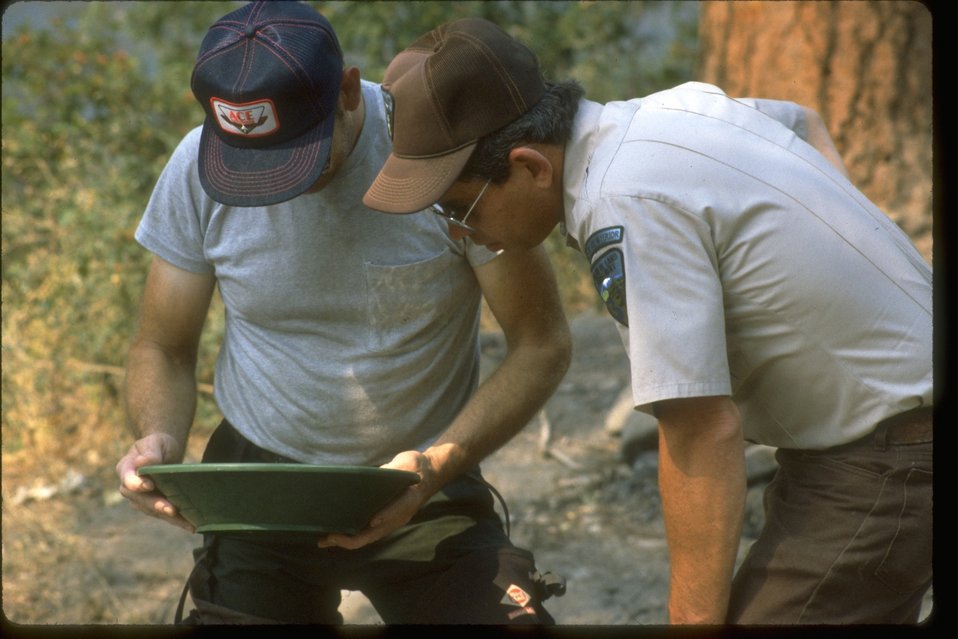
Recreational gold panning in the Yakima River Canyon.